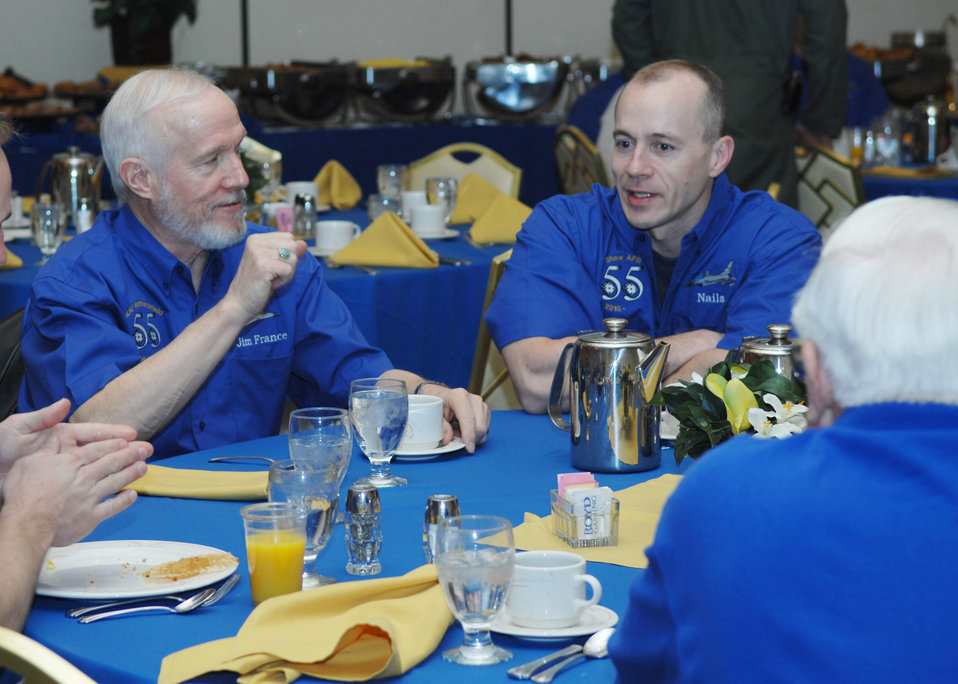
Past, present Shooters unite

Lt. Col. Jim France (left) speaks with Lt. Col. Jason Plourde during a ?Shooter? reunion breakfast, March 6, 2010, in Las Vegas. Colonel France is a 55th Fighter Squadron